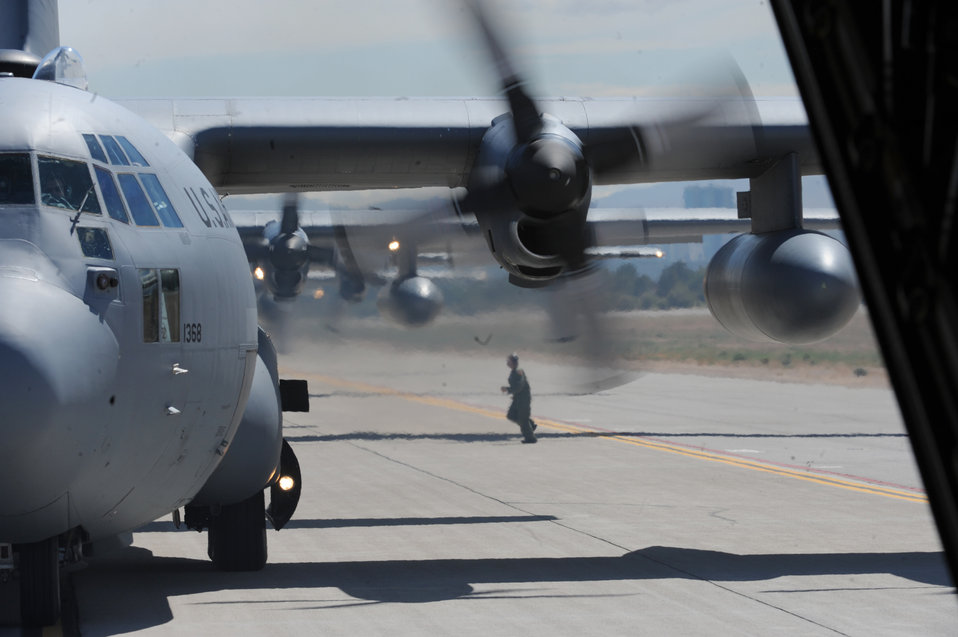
Mobility exercise

An aircrew member conducts a post-flight inspection of a C-130 Hercules May 18, 2011, at Nellis Air Force Base, Nev.